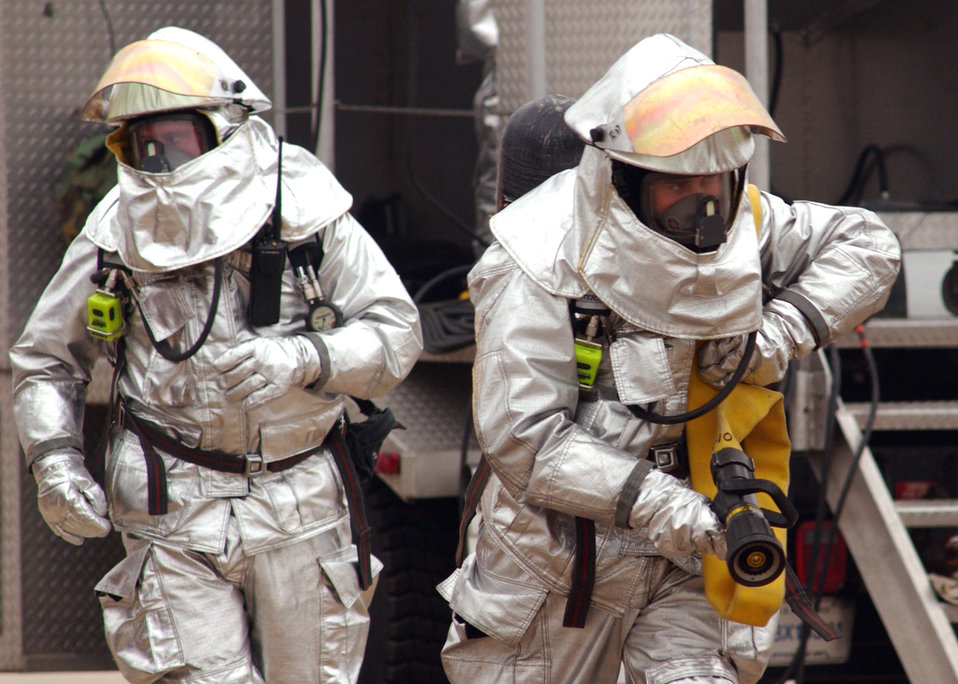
Fire alarm

KUNSAN AIR BASE, South Korea -- Airman 1st Class Joshua Sexton and Senior Airman Dea Anglo Williams rush to put out a simulated aircraft fire during Operational Readiness Exercise Beverly High 0404 here March 22. Airmen Williams and Sexton are from the 8th Civil Engineer Squadron.